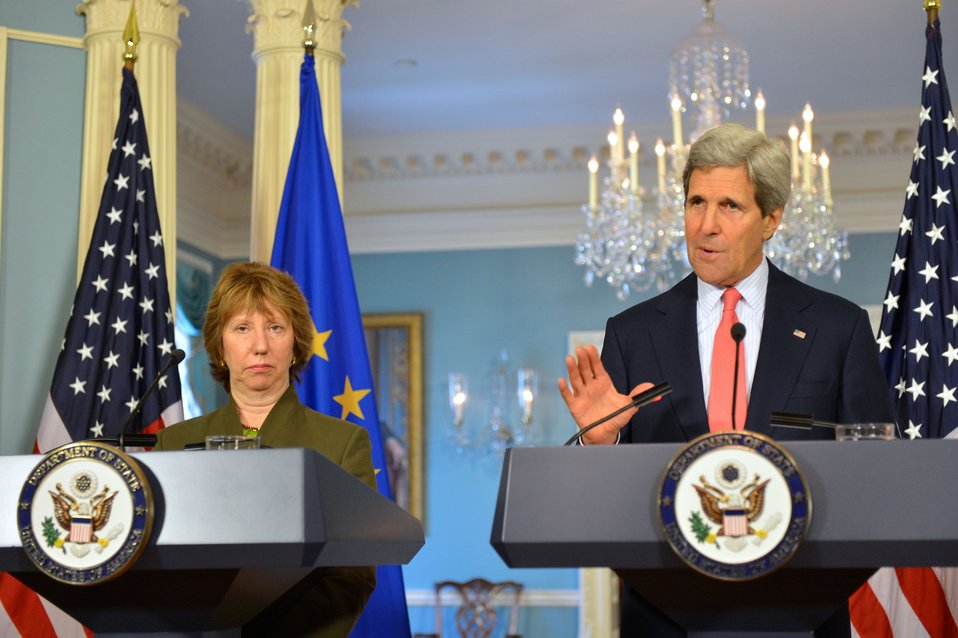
Secretary Kerry and EU High Representative Ashton Address Reporters

U.S. Secretary of State John Kerry and EU High Representative Lady Catherine Ashton hold a joint press conference at the U.S. Department of State in Washington, D.C., on May 6, 2014.